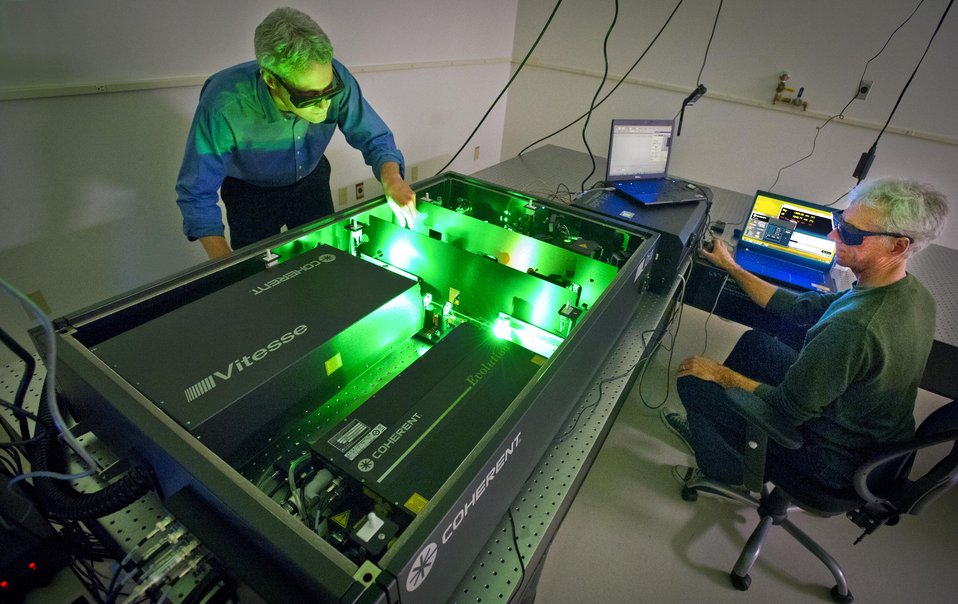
The Joint Center for Artificial Photosynthesis (JCAP)-North, a DOE energy innovation hub aimed at developing the technology to commercially generate fuels directly from sunlight.
JCAP is operated as a partnership between the California Institute of Technology and Berkeley Laboratory.